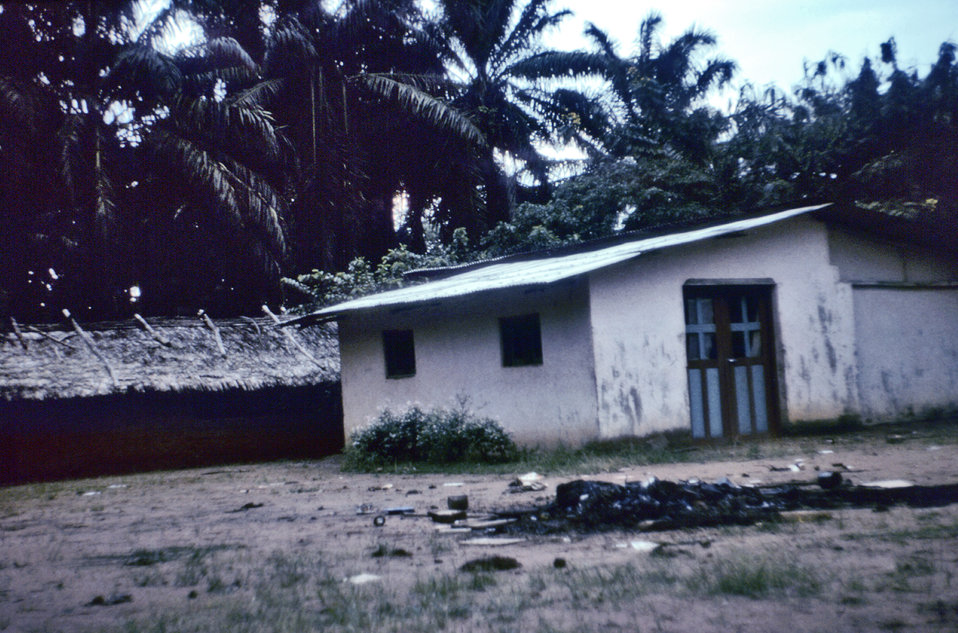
This photograph shows the house of nurse Mayinga, who died during the 1976 Ebola outbreak in Yambuku, Zaire (now known as the Democratic Republic of the Congo).